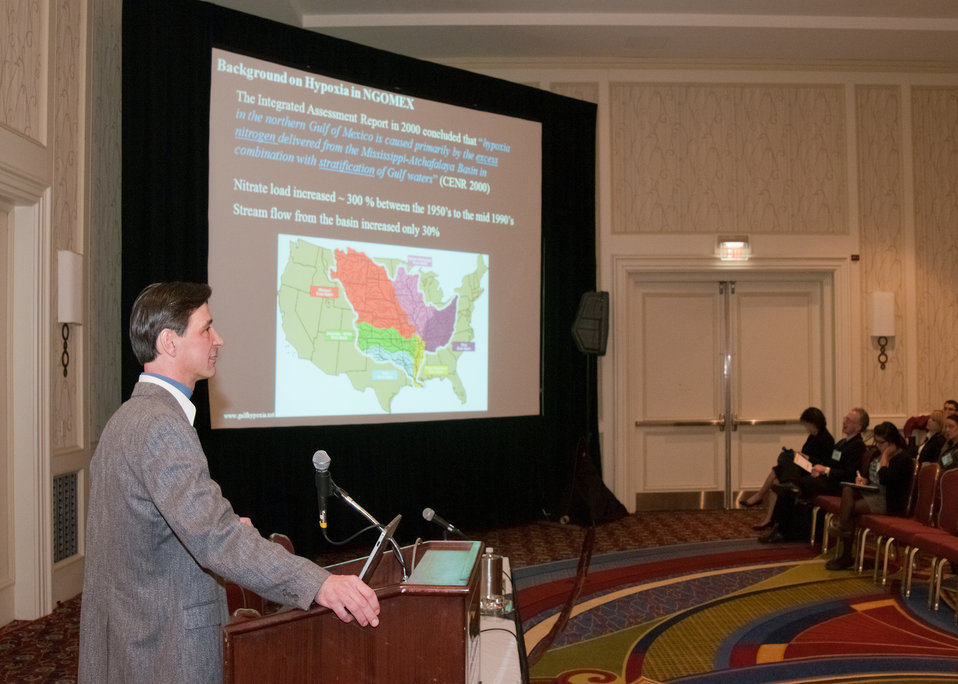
Nathaniel Ostrom, Professor and Graduate Program Director, Department of Zoology, Michigan State University, East Lansing, Michigan discussed the affects of oil and hypoxia after the gulf oil spill in the Gulf of Mexico at the at the World Agricultural Outlook Board Forum in Crystal City, VA, on Thursday, February 24, 2011.